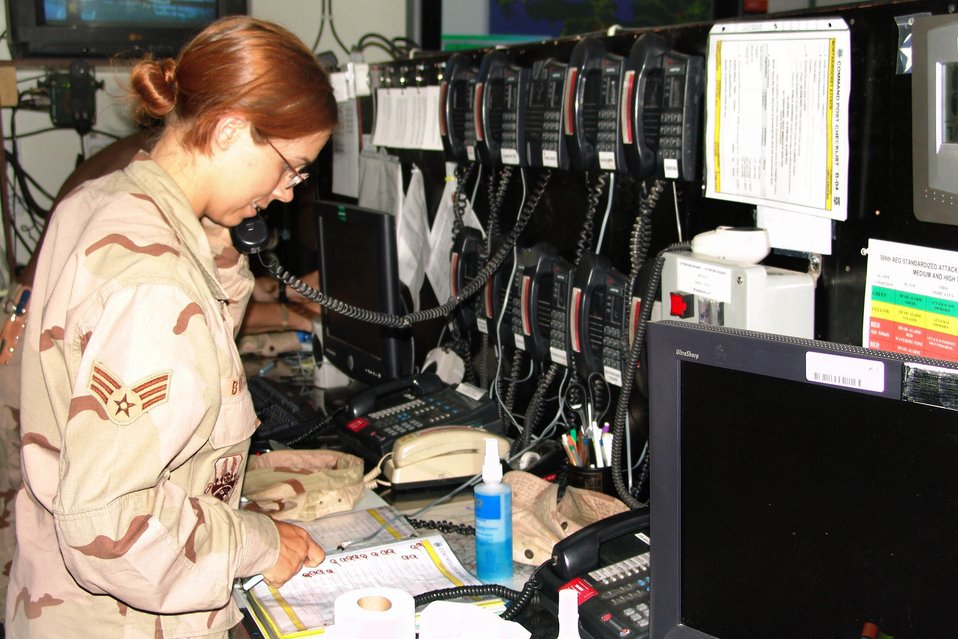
Command post's hidden mission important to base

KIRKUK AIR BASE, Iraq -- Senior Airman Meghan Boyce runs a checklist in the command post here. She is a command post controller with the 506th Air Expeditionary Group.